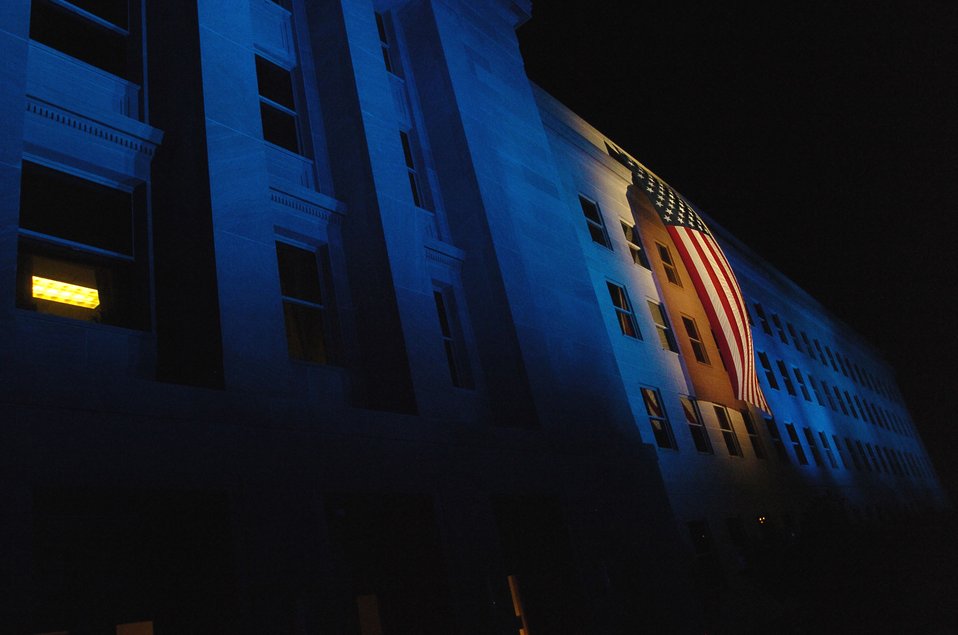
Beams of light honor those who died at Pentagon

A flag hangs as a memorial during the 2nd Annual Freedom Walk at the Pentagon Sept. 10. The flag and lights illuminate the spot where American Airlines Flight 77 crashed into the Pentagon Sept. 11, 2001. As part of the tribute, 184 beams of light rose from the courtyard of the Pentagon for each of the lives lost when the plane crashed into the building.